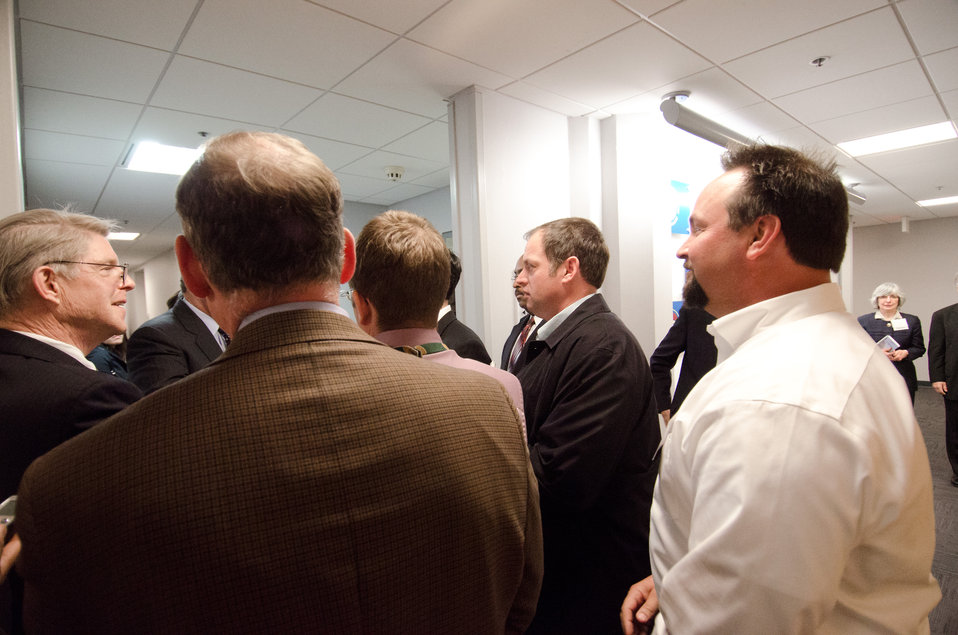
Kerman, CA farmer Steve Koretoff (white shirt) tried to meet U.S. Department of Agriculture Secretary Tom Vilsack after he spoke at the Organic Trade Association’s 2011 Policy Conference, but reporters got to Secretary Vilsack before him, for an impromptu press conference in a hallway on Wednesday, April 6, 2011, at the Hall of States, in Washington, DC. He finally got a word in over the voices of the reporters and identified himself as a farmer, Vilsack made accommodations for both by inviting Mr. Koretoff to walk with him toward his waiting vehicle.